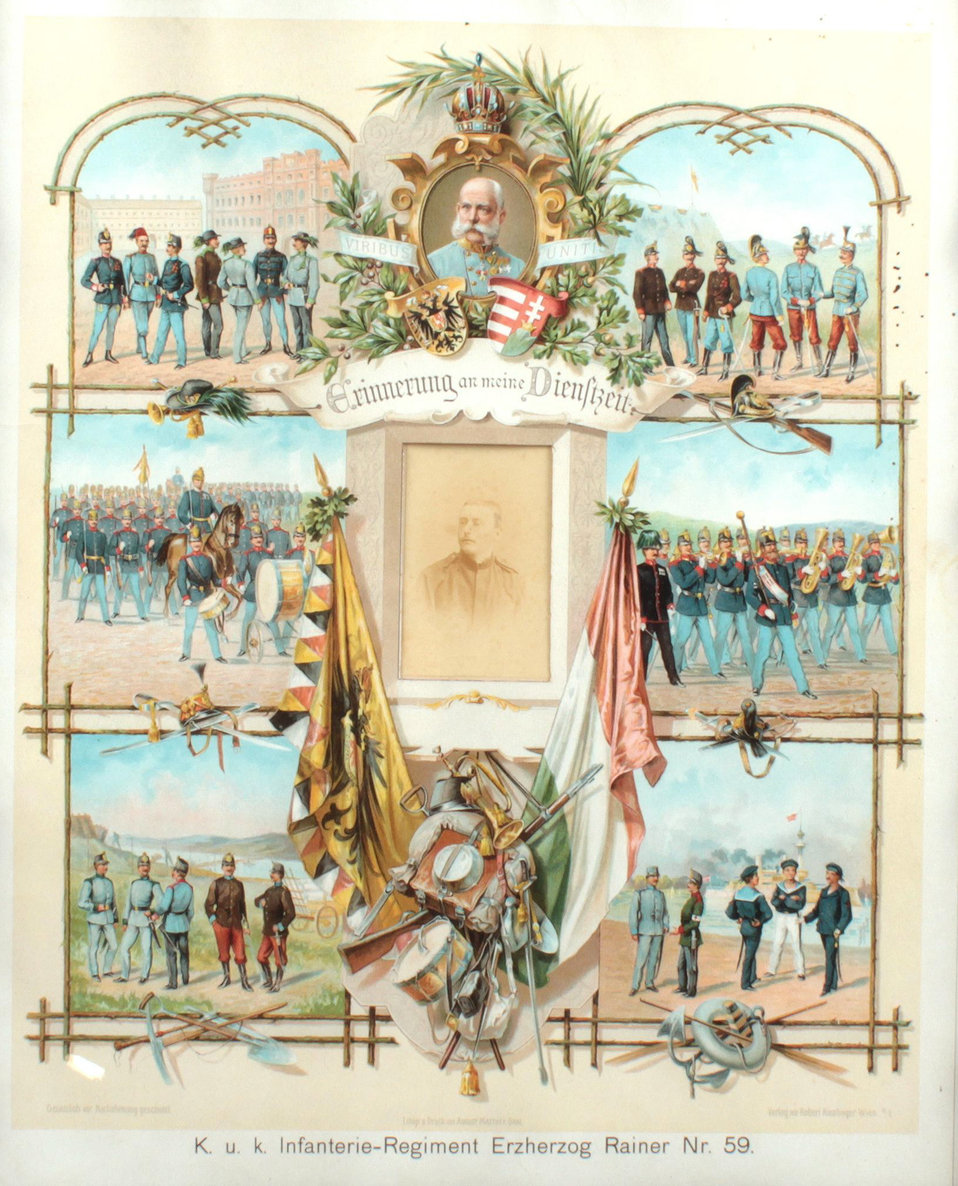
Erinnerung an meine Dienstzeit mit Fotografie des Reservisten. Inschrift 'K. u. k. Infanterieregiment Erzherzog Rainer Nr. 59'.